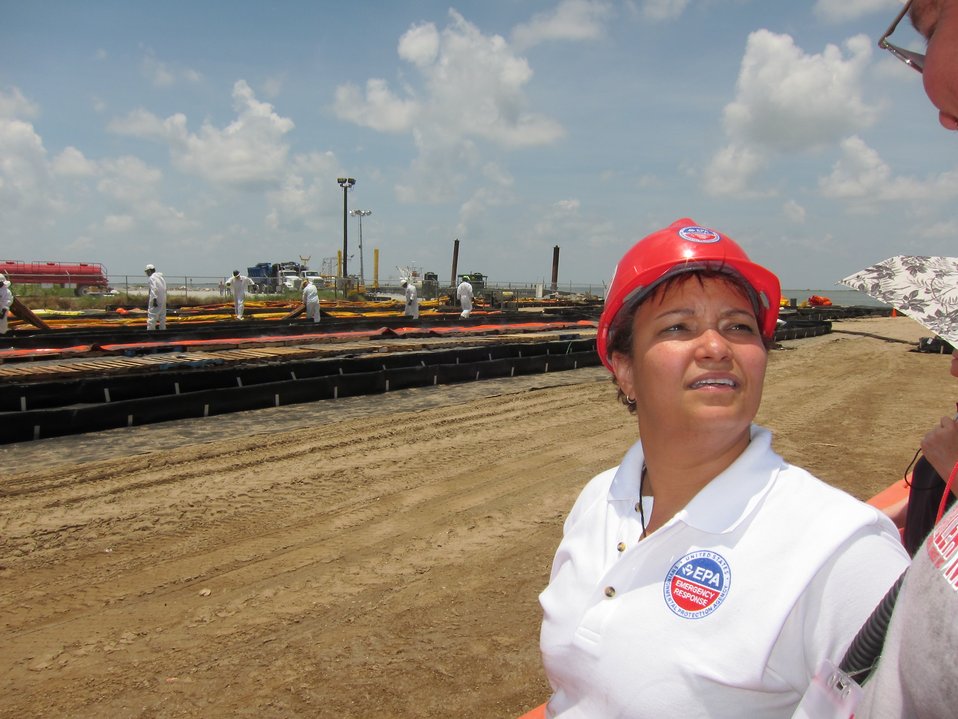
EPA Administrator Jackson on Grand Isle

June 11, 2010 - EPA Administrator Lisa P. Jackson at boom cleaning operations on Grand Isle, Louisiana.